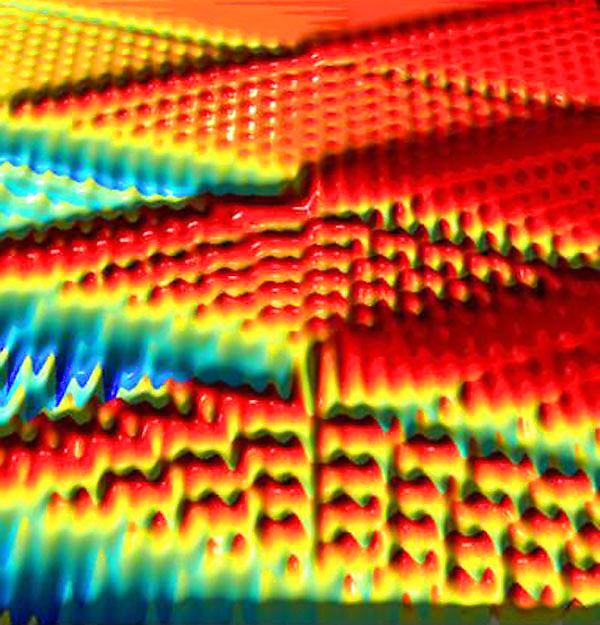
MIT research enhances high-speed computers

Amplitude spectroscopy energy landscape generates a unique